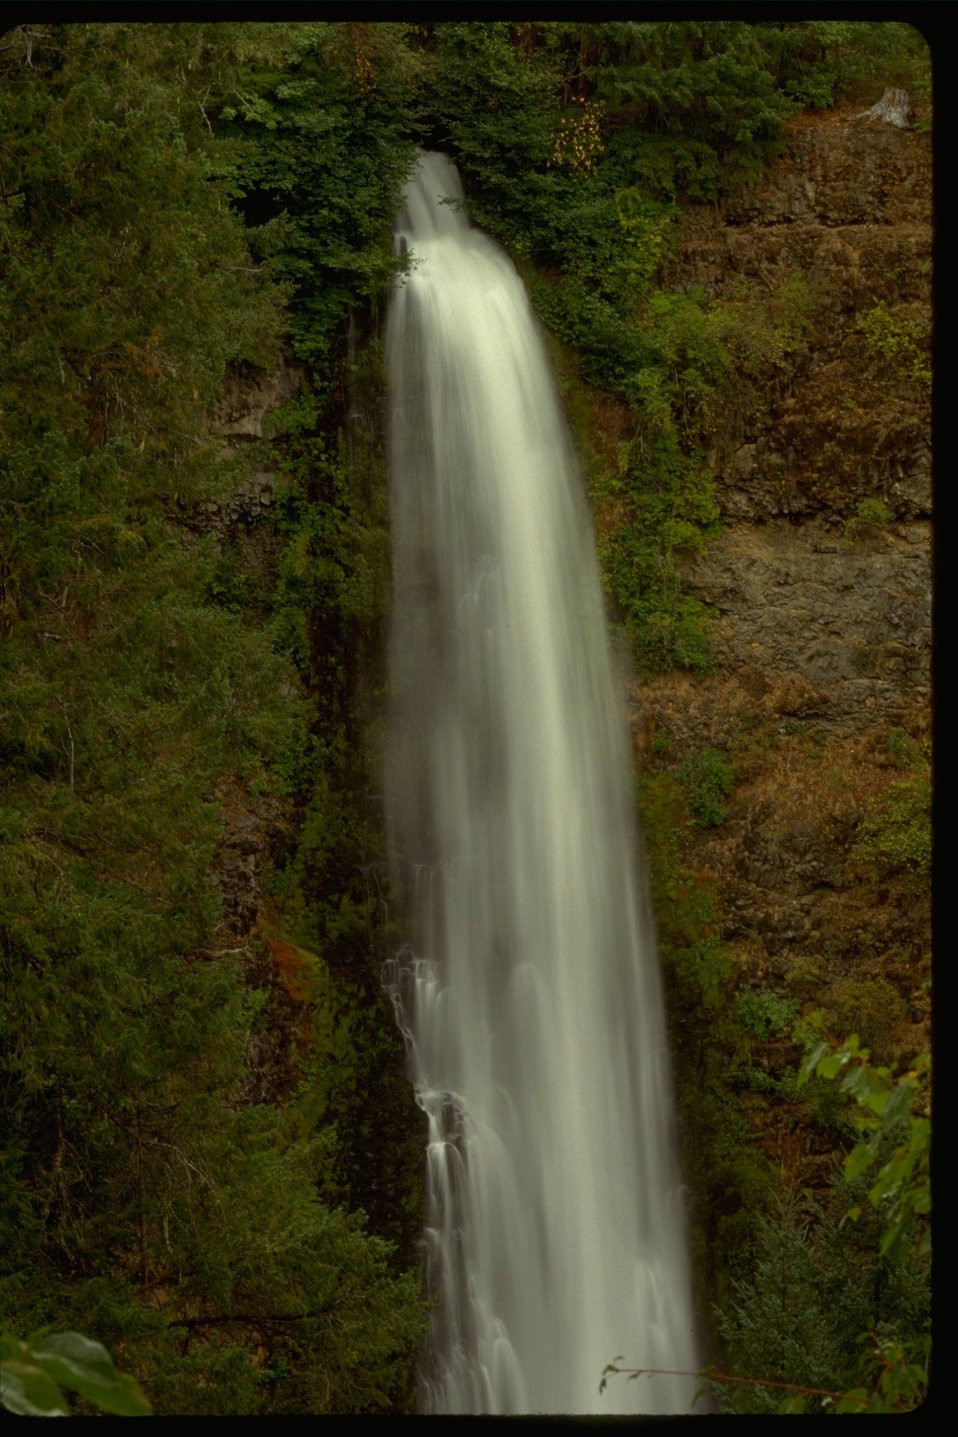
Mill Creek Falls on the Upper Rogue River.